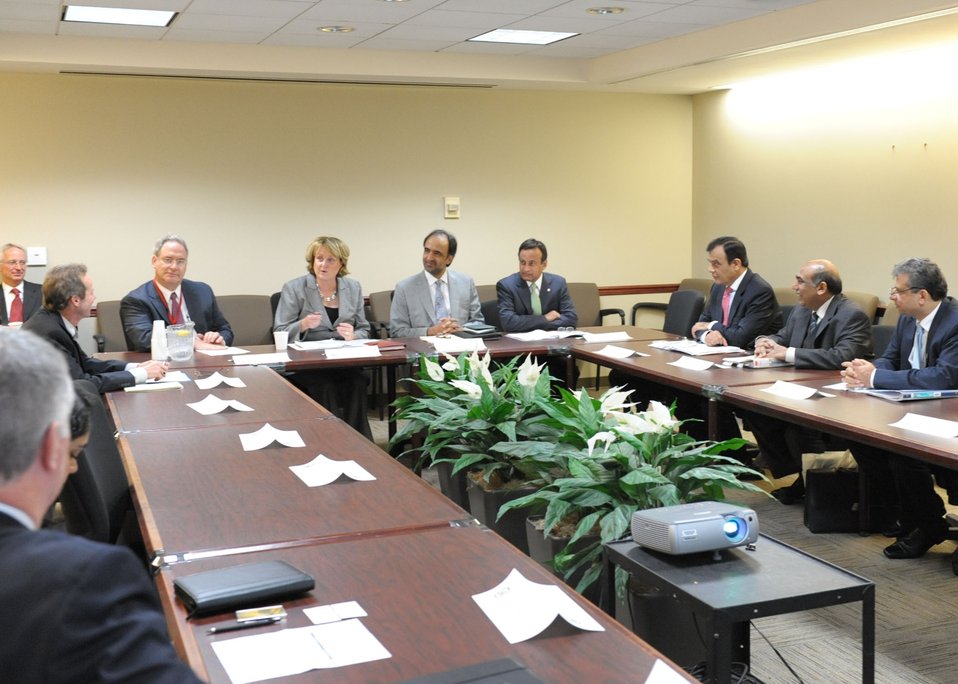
Under Secretary McHale Leads the U.S.-Pakistan Strategic Dialogue Communications Working Group

Members of the U.S.-Pakistan Strategic Dialogue Communications Working Group interact at the U.S. Department of State in Washington, D.C., on October 20, 2010. Participants included State Department Under Secretary for Public Affairs and Public Diplomacy Judith McHale, Office of the Special Representative for Afghanistan and Pakistan Special Advisor Ashley Bommer, Pakistani Secretary of Information Technology Naguibullah Malik, and Pakistani Secretary of Information and Broadcasting Mansoor Sohail.